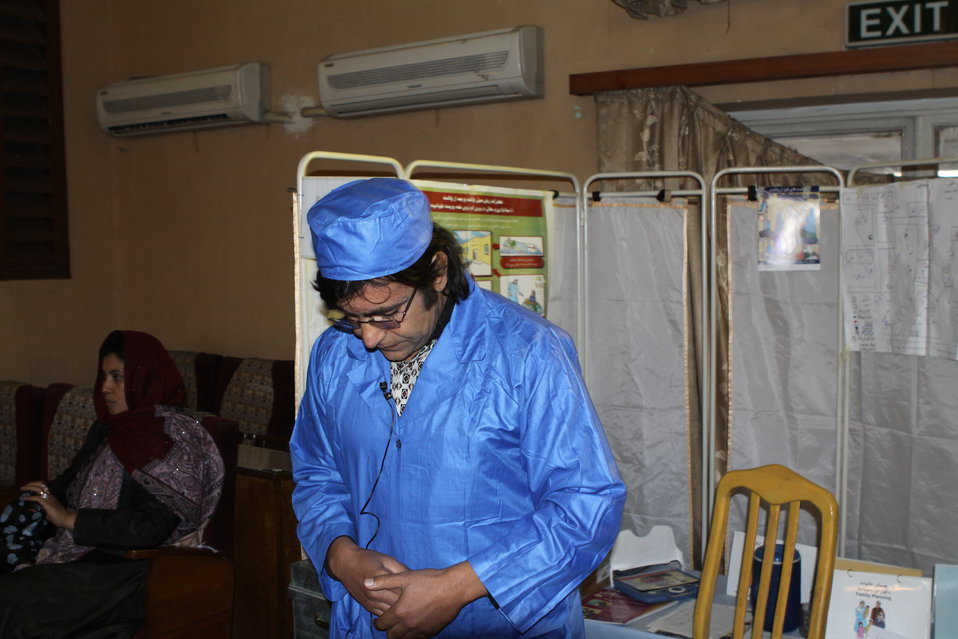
Community Health Workers Celebrated

Kabul, Afghanistan | December 5, 2010 — In support of the United Nations designated International Volunteer Day for Economic and Social Development, Afghanistan’s Ministry of Public Health celebrated its annual Community Health Worker Day today. Acting Minister of Public Health Dr. Suraya Dalil, USAID Senior Deputy Mission Director Robert Hellyer, other government officials, and international donors joined in recognizing the critical contribution of community health workers in Afghanistan and encouraging them to continue their voluntary support to their communities.
The event praised the contributions of the more than 22,000 volunteers throughout the country who deliver community level health-education, counseling, and services out of village health posts located in private homes. The Ministry of Public Health envisioned that community-based healthcare programs will actively encourage communities and families to adopt healthy lifestyles and behaviors, and provide families access to high quality and socially acceptable preventative medicine and life-saving services.
“We have 22,000 community health workers in Afghanistan that are able to implement the basic and standard medicines. They all have been trained through a job description,” said Minister Dalil. Addressing the health workers, she added, “I am proud and feel powerful that I have people like you.”
USAID-funded health projects collaborate closely with the Ministry of Public Health to improve the health and nutritional status of Afghans, provide quality primary healthcare, and promote healthy behaviors at the community and household-levels. USAID supported the training of more than 9,000 of the volunteer community health workers currently working in Afghanistan.
“On behalf of the American people, I congratulate the Community Health Workers for their diligence to gain the skills and knowledge necessary to serve their communities in this important role,” said USAID Senior Deputy Mission Director Hellyer. “USAID strongly supports community based health care and believes that quality community-based health services are essential to reaching Afghanistan’s Millennium Development Goals.”
To support the Basic Package of Health Services, USAID assisted in developing the community health worker training manual, helped train community health worker supervisors and master-trainers, facilitated in-service training, and produced and developed reporting tools, job aids, and education materials.